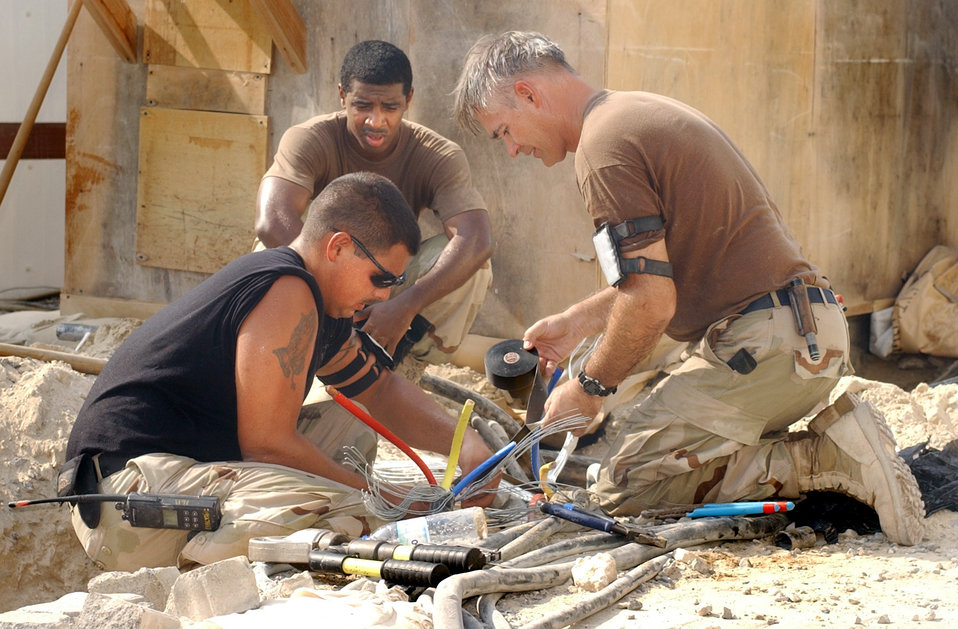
Spicing job

OPERATION ENDURING FREEDOM -- (Left to right) Airmen 1st Class Trevor Jones and Mike Nettles, and Tech. Sgt. Terry Zarazee splice electrical cables at a forward-deployed location in Southwest Asia. The work is part of an upgrade of the electrical system at the base. The airmen are assigned to the 380th Civil Engineer Squadron. Zarazee and Jones are deployed from Dyess Air Force Base, Texas. Nettles is deployed from Beale AFB, Calif.